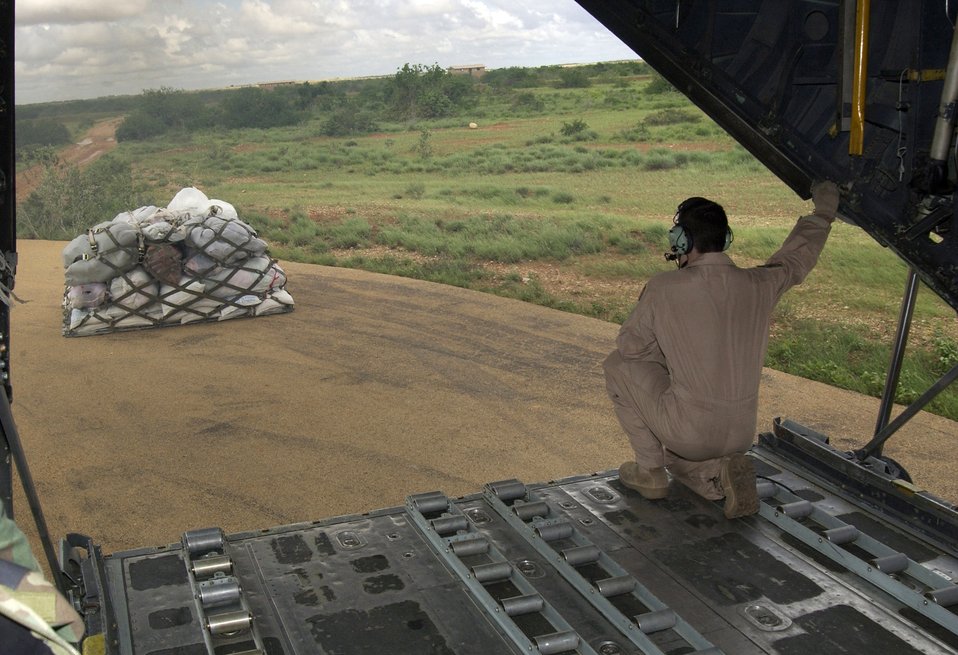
Ethiopia Flood Relief

C-130 Hercules assigned to Combined Joint Task Force - Horn of Africa delivered humanitarian aid to flood victims in the Ogaden region of Ethiopia Nov. 10.